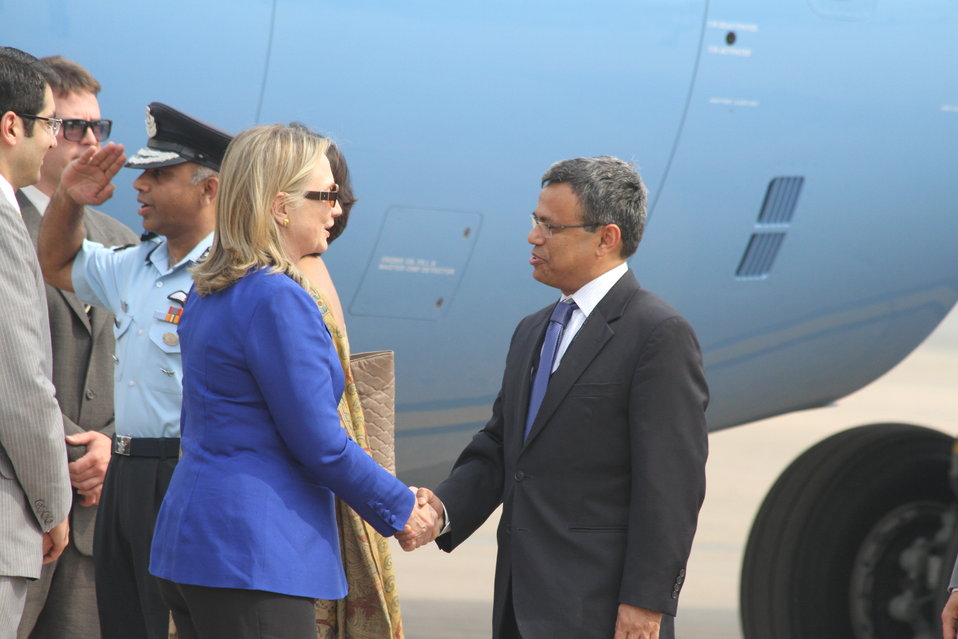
Secretary Clinton Is Greeted By Indian Joint Secretary Americans Ashraf

U.S. Secretary of State Hillary Rodham Clinton is greeted by Indian Joint Secretary Americas in the Ministry of External Affairs Javed Ashraf upon her arrival to New Delhi, India, on May 7, 2012.